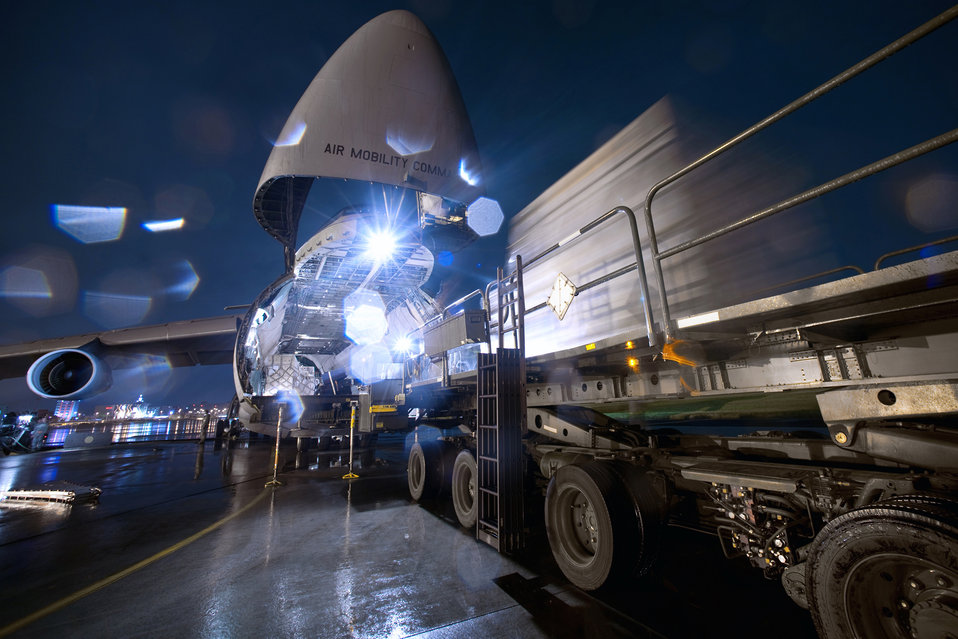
Rapid loading for the fight

Airmen from the 730th Air Mobility Squadron at Yokota Air Base, Japan, use a large K-loader to move supply and equipment pallets onto a C-5 Galaxy. As the airlift hub of the western Pacific, Airmen at Yokota AB work operations 24/7 to keep inbound and outbound aircraft moving efficiently.